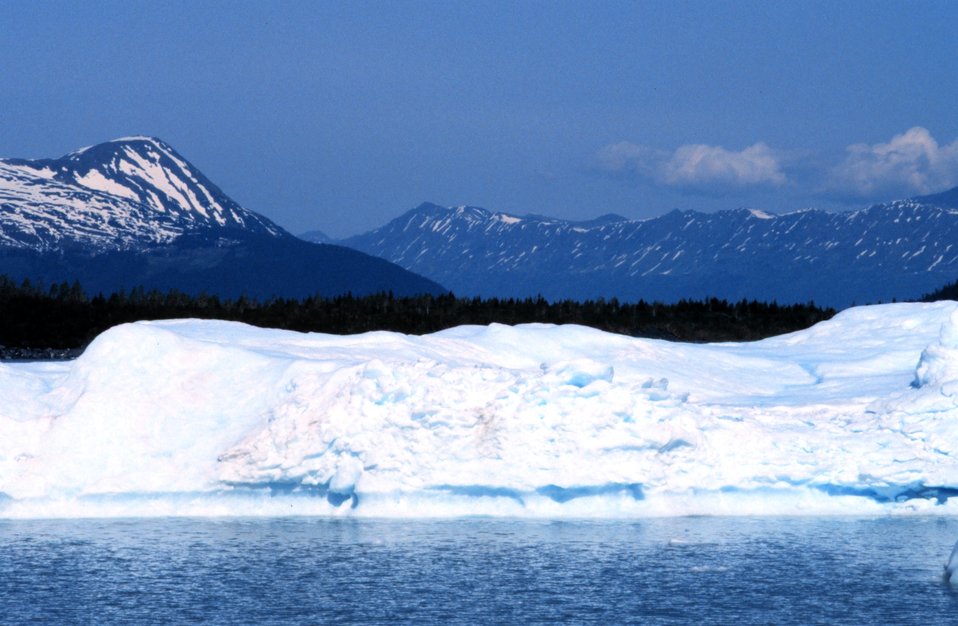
Iceberg in Seward area